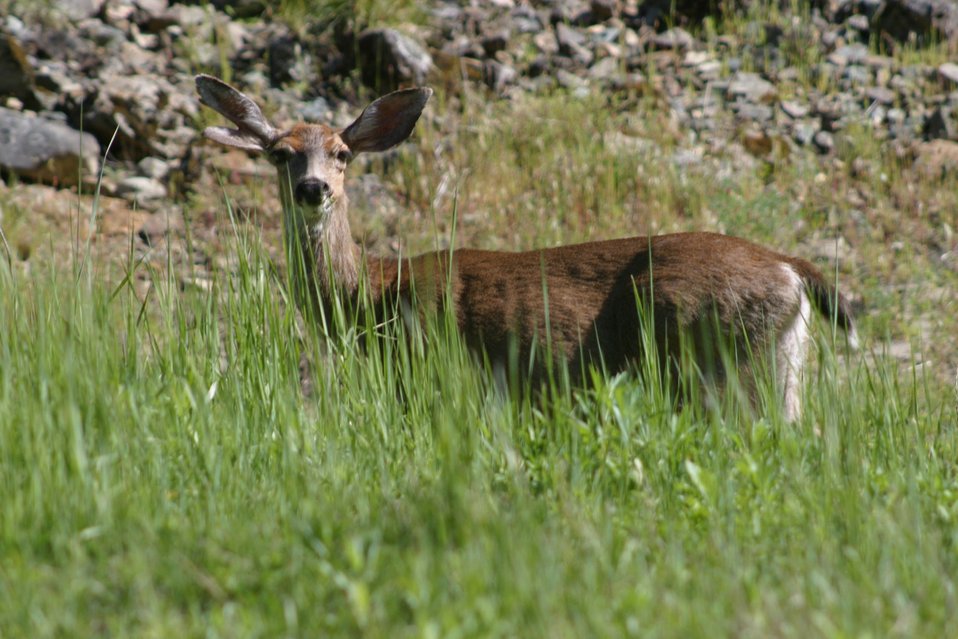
Wild section of the Rogue River from Grave Creek to Foster Bar May 19 to May 22.